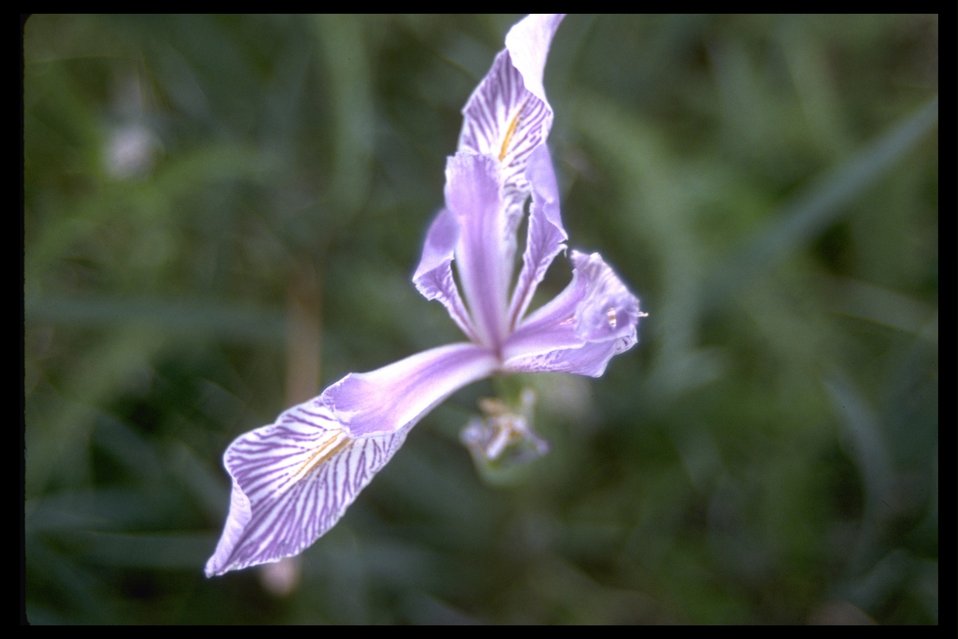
Wild lily.